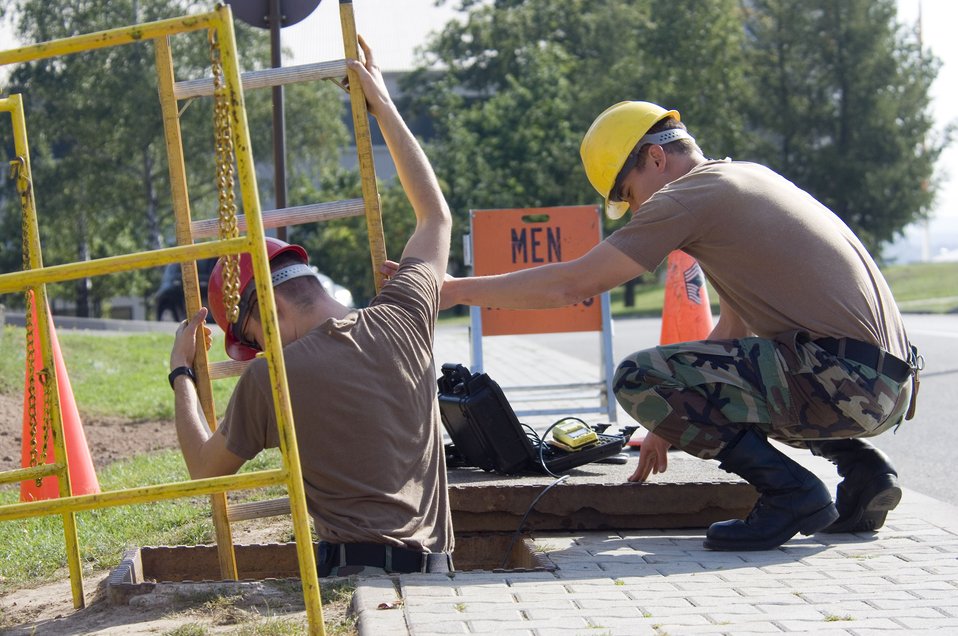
Down a manhole

Airman Kenneth Townsend holds the ladder for Airman 1st Class Jeremi Welborn as he descends into a manhole at Ramstein Air Base, Germany, Sept. 11. They are cable maintainers with Ramstein's 435th Communications Squadron.